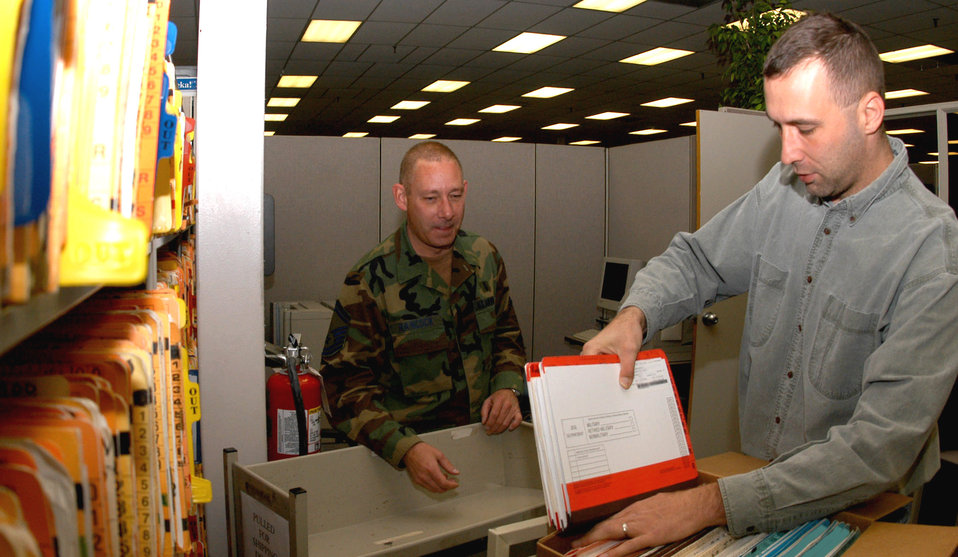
Records change

DENVER (AFPN) -- Senior Master Sgt. Jeffrey Hancock watches David Fisher pack medical and dental records headed for Osan Air Base, Korea. They are members of the Air Reserve Personnel Center health services directorate.